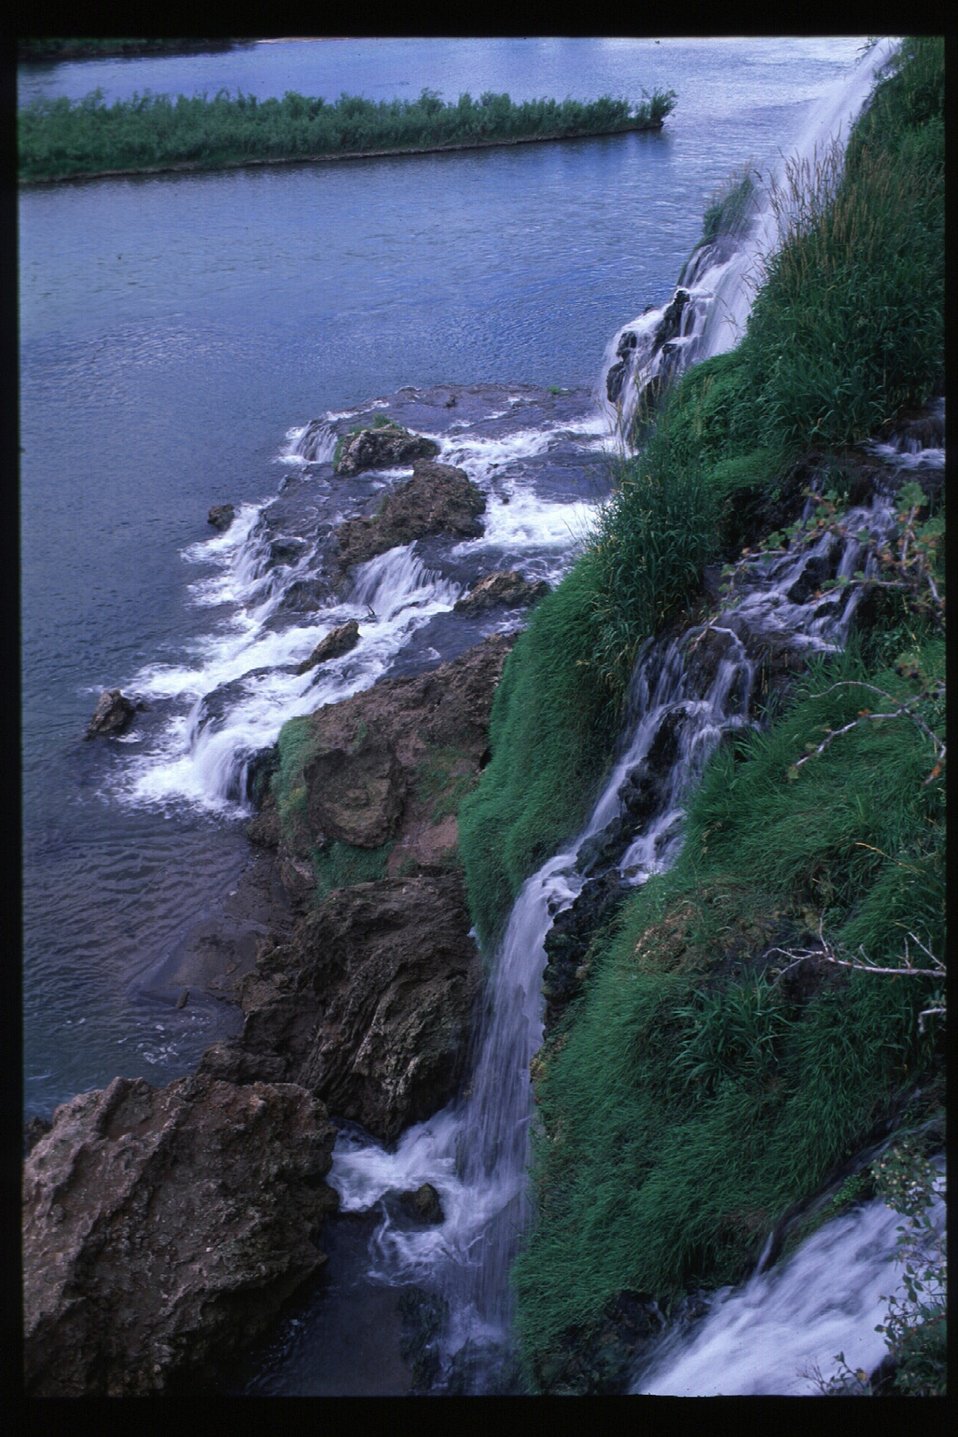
Scenics Fall Creek Falls Water Fall Snake River Canyon USRD Upper Snake River District